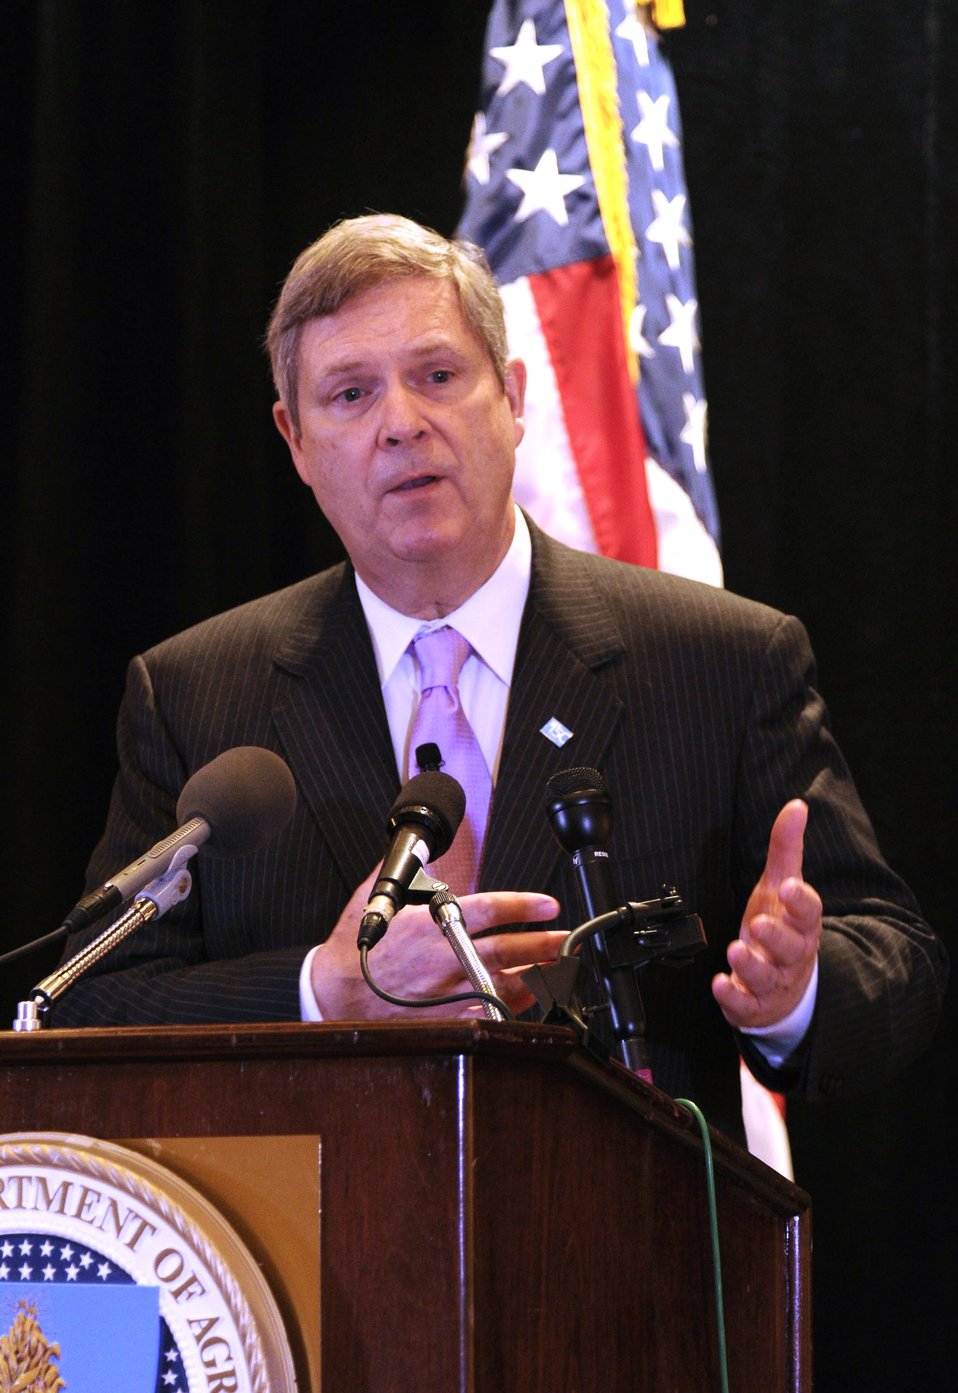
Agriculture Secretary Tom Vilsack speaking at a press conference following his remarks at the 2012 Agricultural Outlook Forum, “Moving Agriculture Forward” in Arlington, VA.. on Thursday, February 23, 2012.